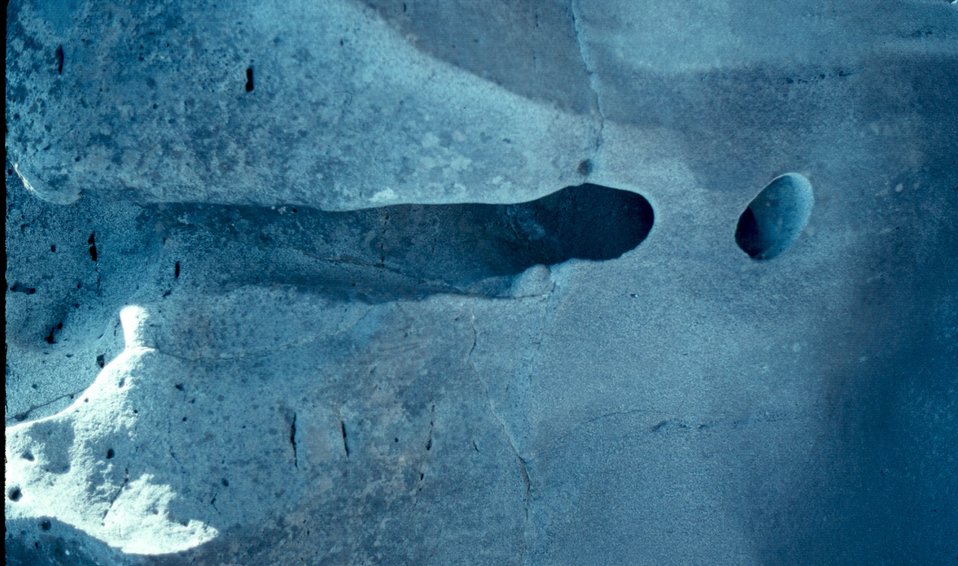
Pothole Shoshone Field Office USRD Upper Snake River District